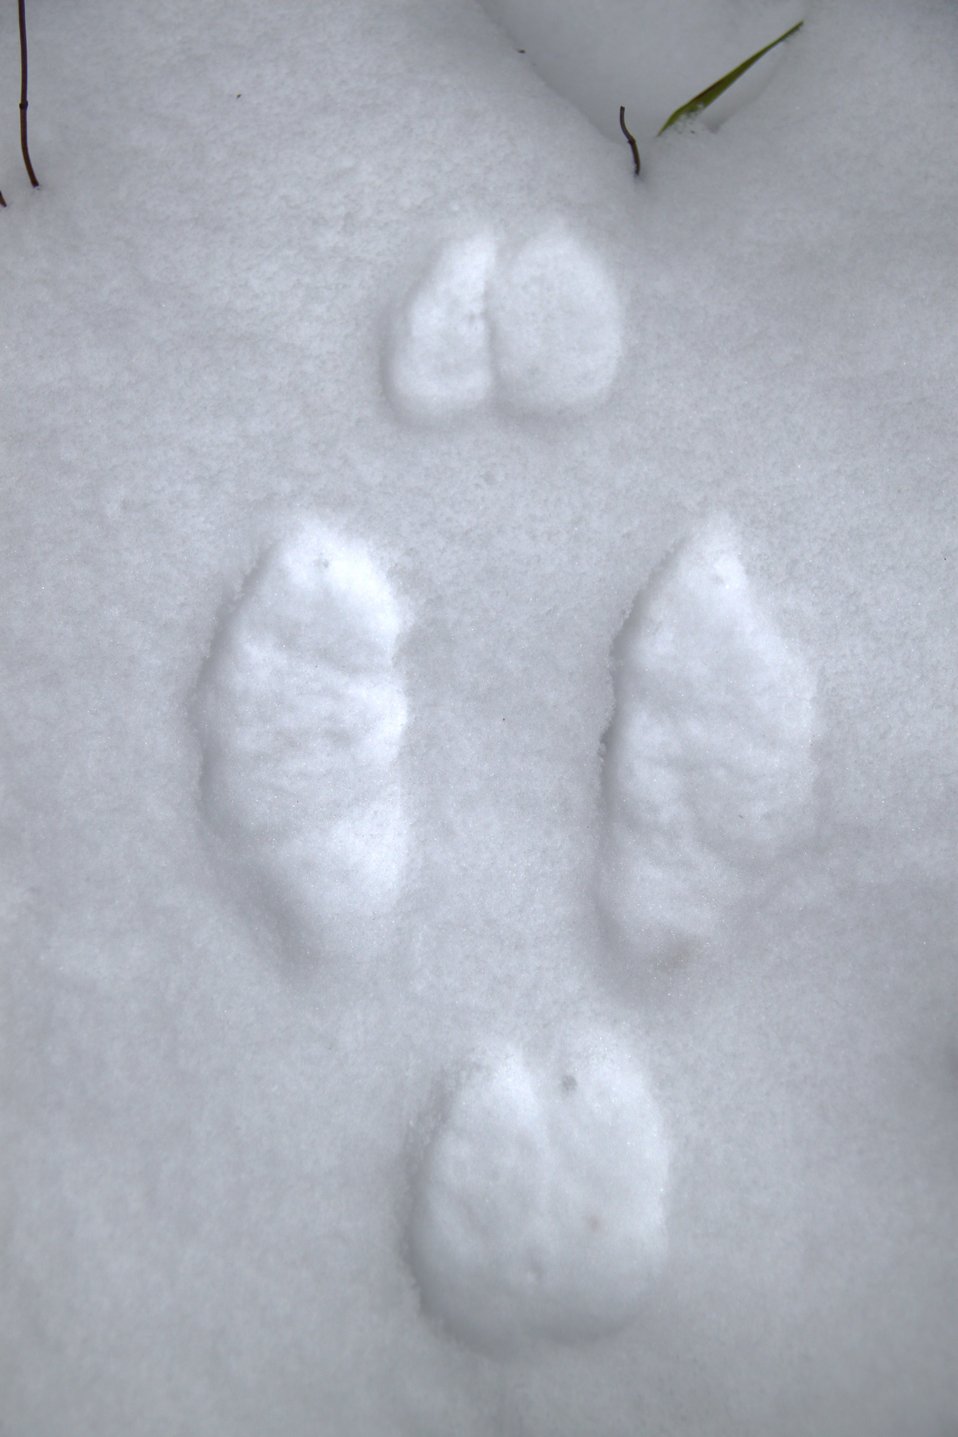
Photo of the Week - Snowshoe Hare tracks in snow (VT)

Snowshoe Hare tracks from the Westville unit of the Missisquoi National Wildlife Refuge. These tracks show that the animal stopped and rested here as evident by the double prints of the front legs.